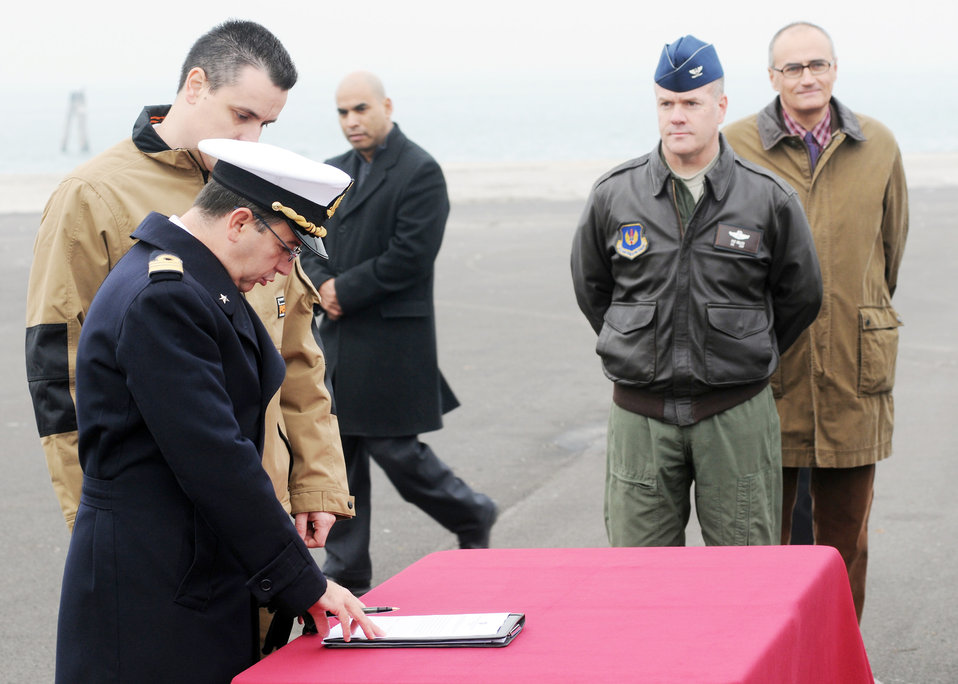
Italian fishermen net historic 'Jug' at sea

Col. Patrick Miller looks on as Italian Navy Cmdr. Franco Maltese signs a document transferring control of an aircraft wreckage to an Italian aero club during a ceremony Nov. 14, 2009, at the Chioggia Lagoon in Italy. Aeroclub Ferrarin in Thiene, Italy, will try to restore the wreckage, believed to be a World War II Army Air Force P-47 Thunderbolt fighter, recovered from the Adriatic Sea during a fishing expedition in May 2009. Colonel Miller is the 31st Operations Group commander from Aviano Air Base, Italy.